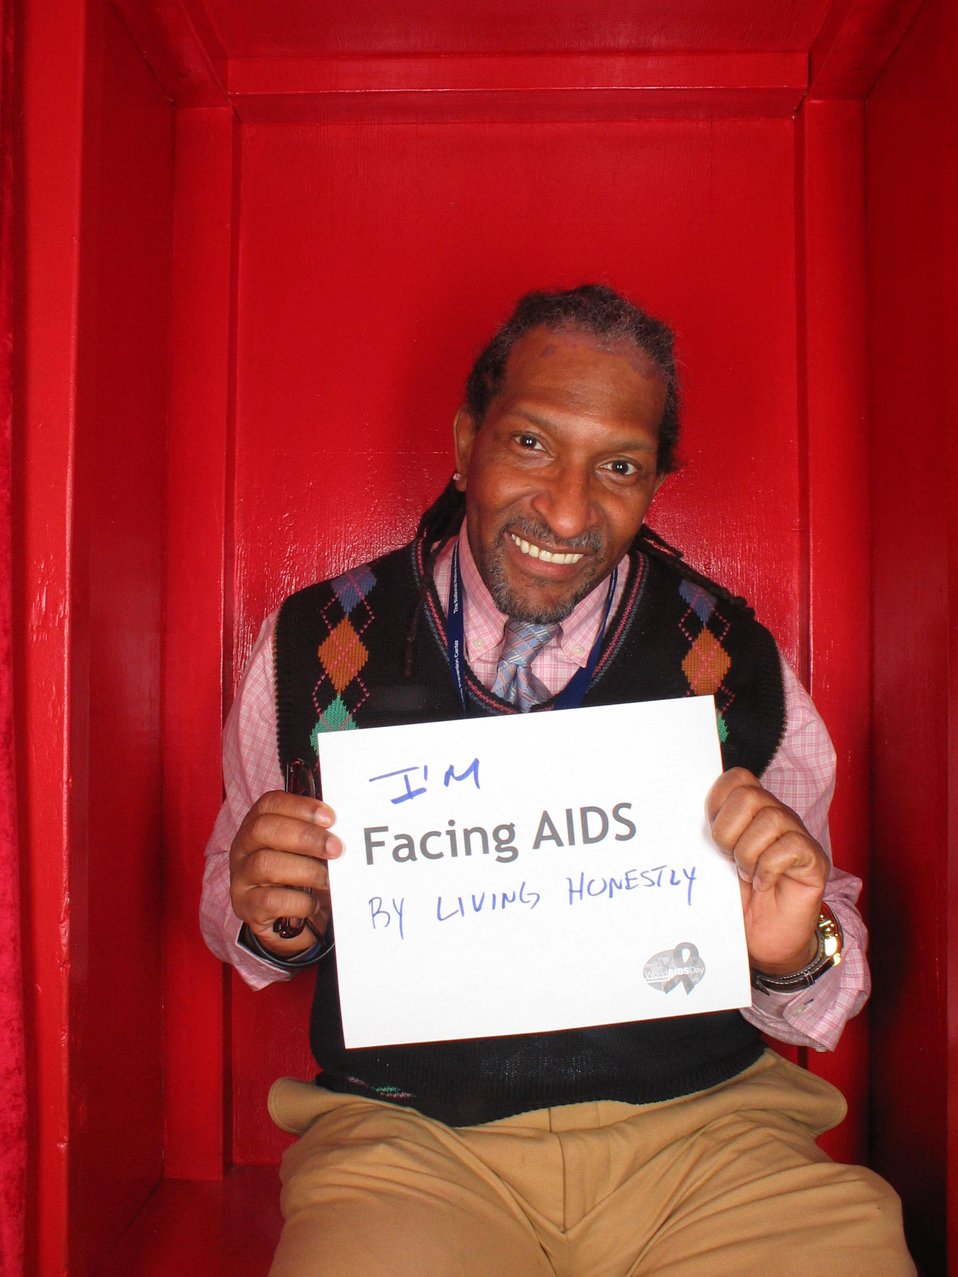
I'm Facing AIDS by living honestly